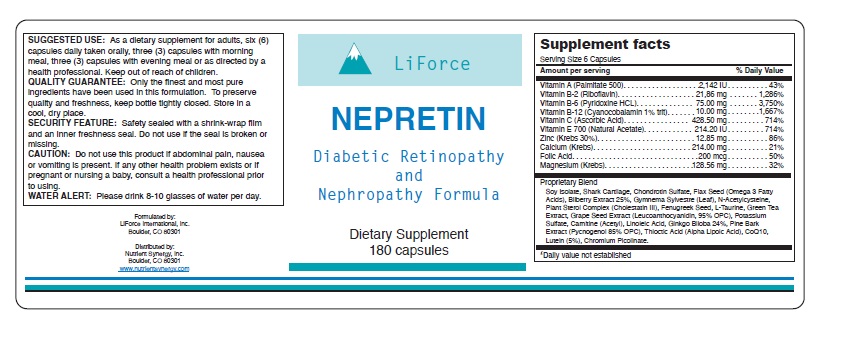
Illegally Sold Diabetes Treatments - Nepretin

This product is promoted with unapproved claims to prevent or treat diabetes and/or its complications. FDA warns consumers to avoid unproven and potentially unsafe products sold as treatments for diabetes.